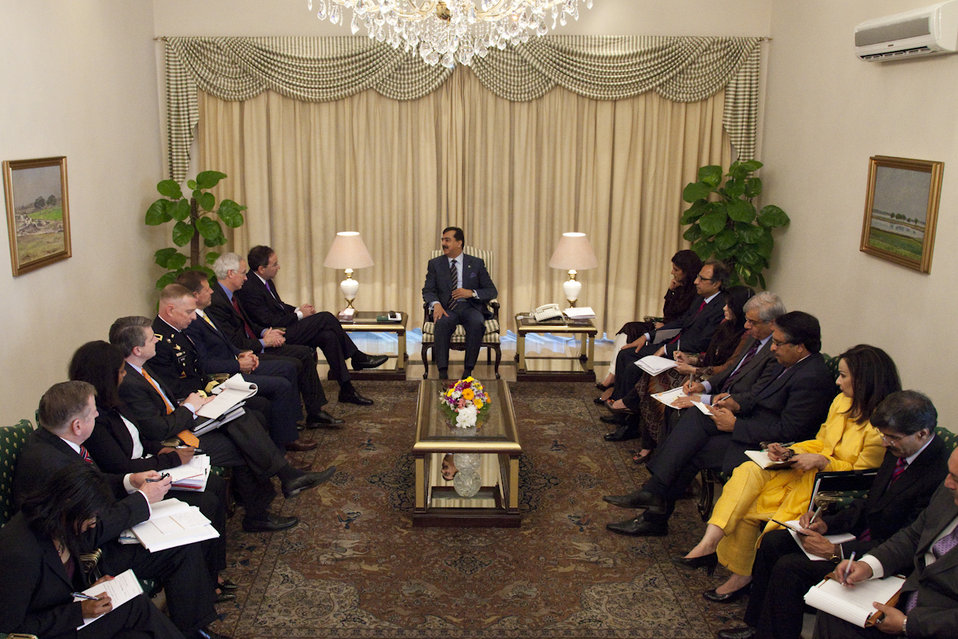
Deputy Secretary Nides Meets With Prime Minister Gilani

U.S. Deputy Secretary of State Thomas Nides meets with Prime Minister Gilani in Islamabad, Pakistan, on April 4, 2012.